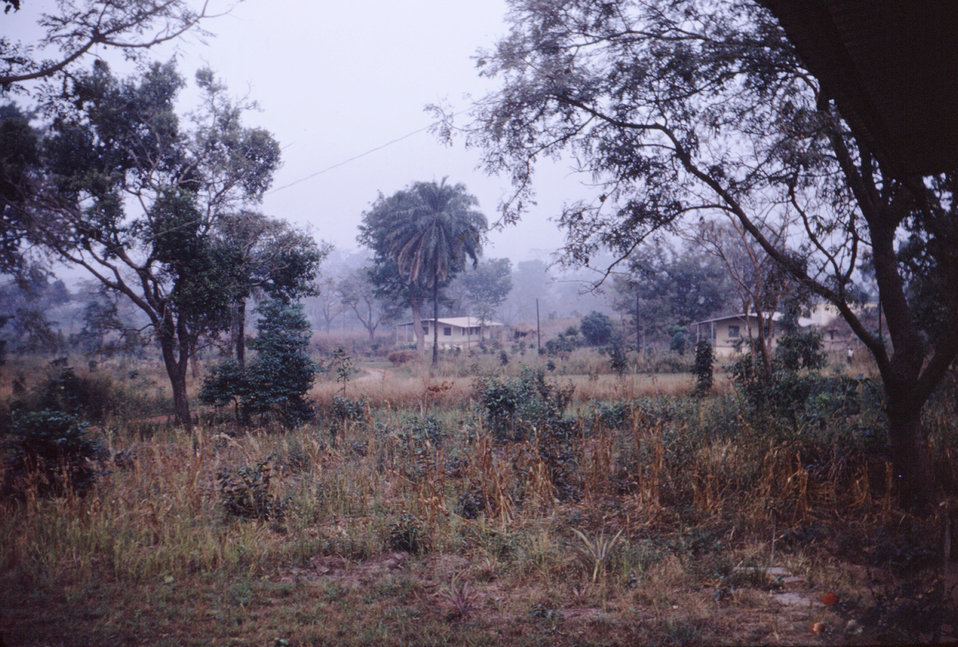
This 1968 photograph showed the terrain outside of a Red Cross refugee relief camp during the Nigerian-Biafran civil war.